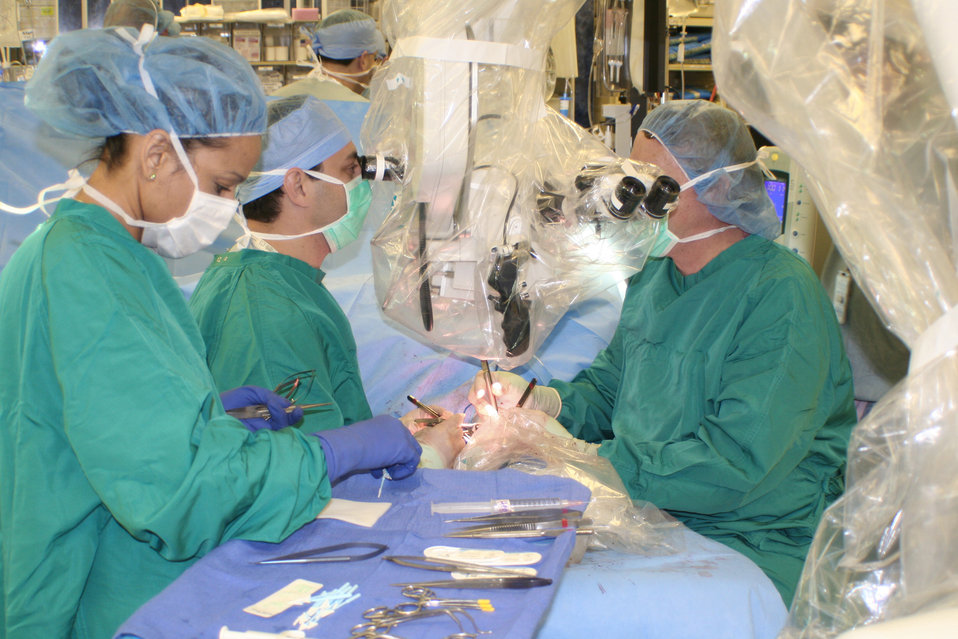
First hand transplant in DOD performed at Wilford Hall

A surgical team composed of military and civilian doctors perform the first-ever female hand transplant Feb. 17, 2010, at Wilford Hall Medical Center, Texas. Retired Master Sgt. Janet McWilliams is the 10th person to undergo this procedure and the first to have it done in a Defense Department facility.